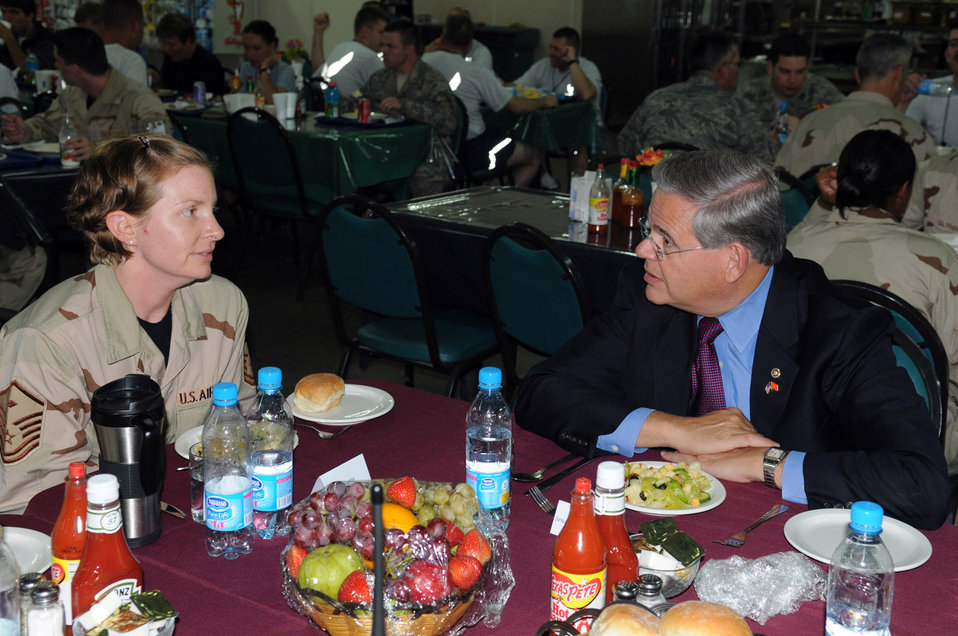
Congressmen visit servicemembers in Manas

Sen. Robert Menendez talks with Master Sgt. Suzanne Roe, 376th Expeditionary Civil Engineer Squadron first sergeant who is deployed from McGuire Air Force Base, N.J. The New Jersey senator and four others visited Manas, Aug. 5, as a part of an eight-day congressional delegation trip to promote security, democracy and development in central Asia. While at Manas, the senators visited with deployed Airmen and learned about the wing's mission as an air mobility hub supporting operations in Afghanistan.